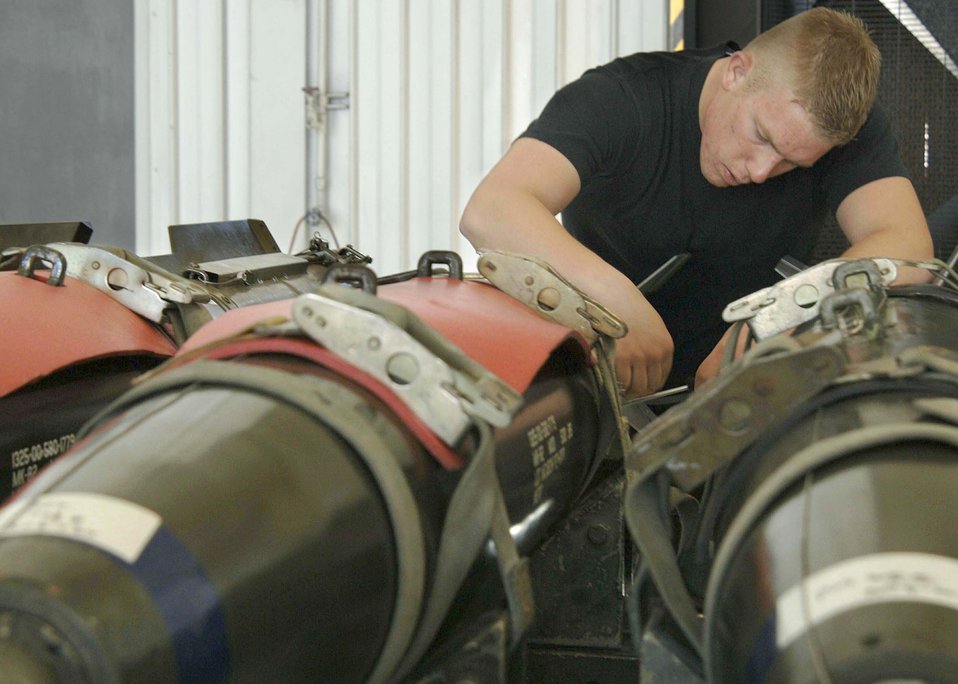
Load crew competition

Airman 1st Class Kevin Shelton prepares munitions before loading operations at the 355th Wing